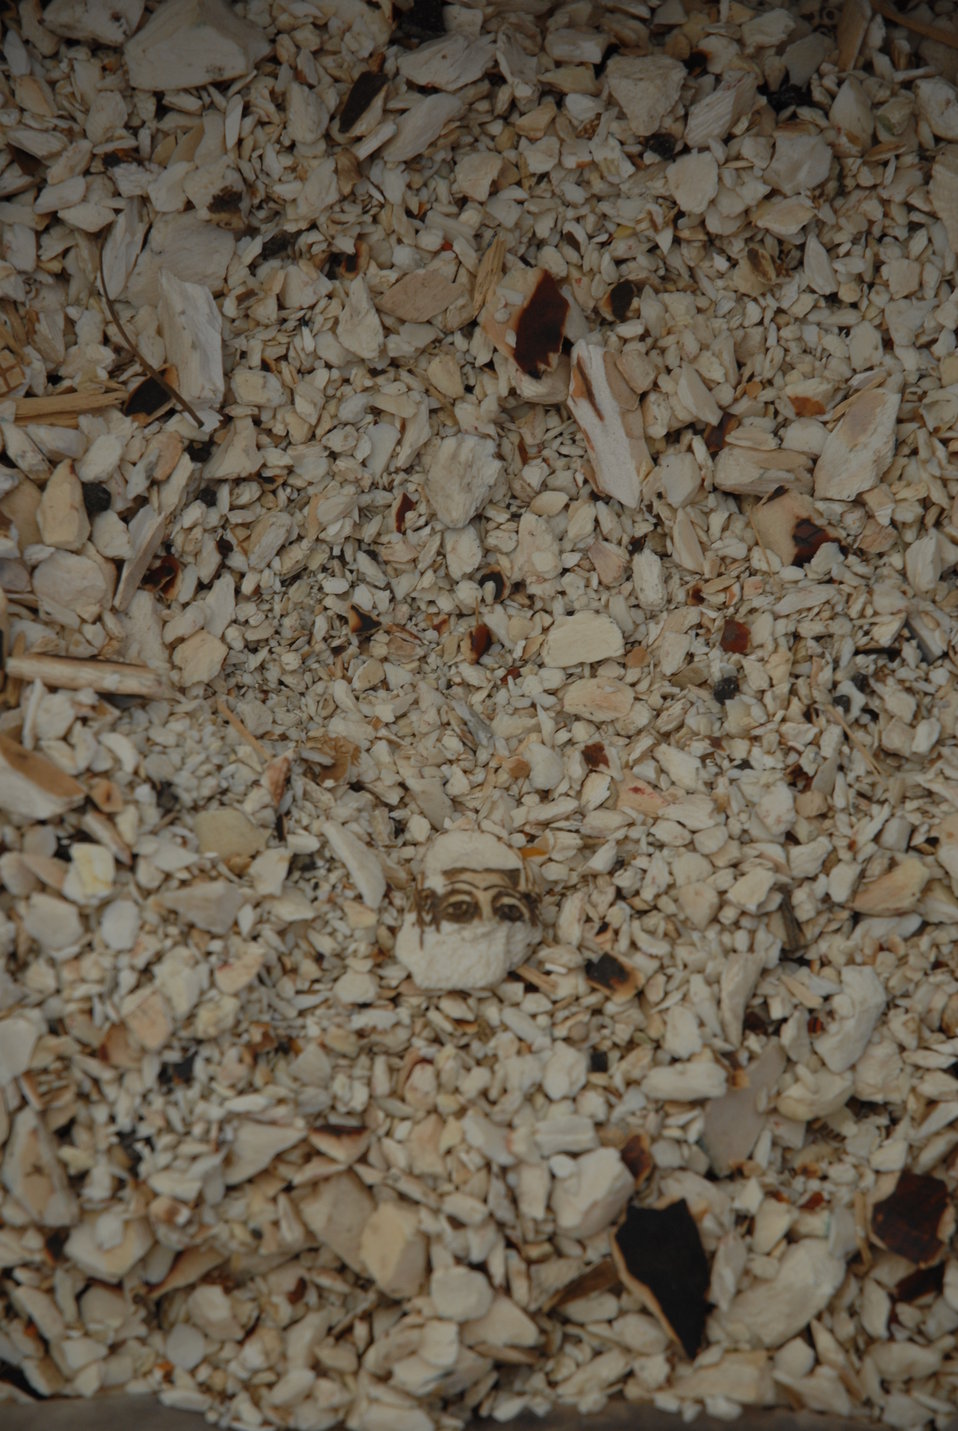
Ivory that has been Crushed.